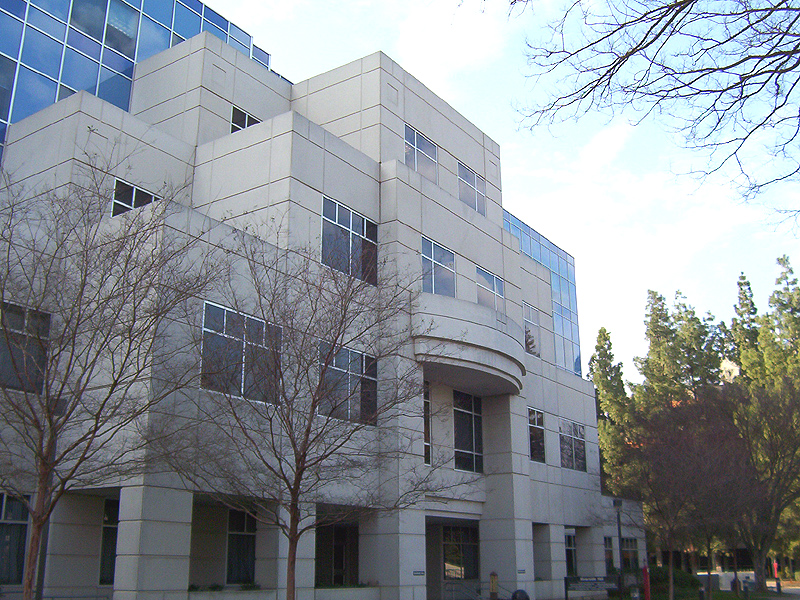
This is a photo of Riverside Hall located on the campus of California State University, Sacramento.